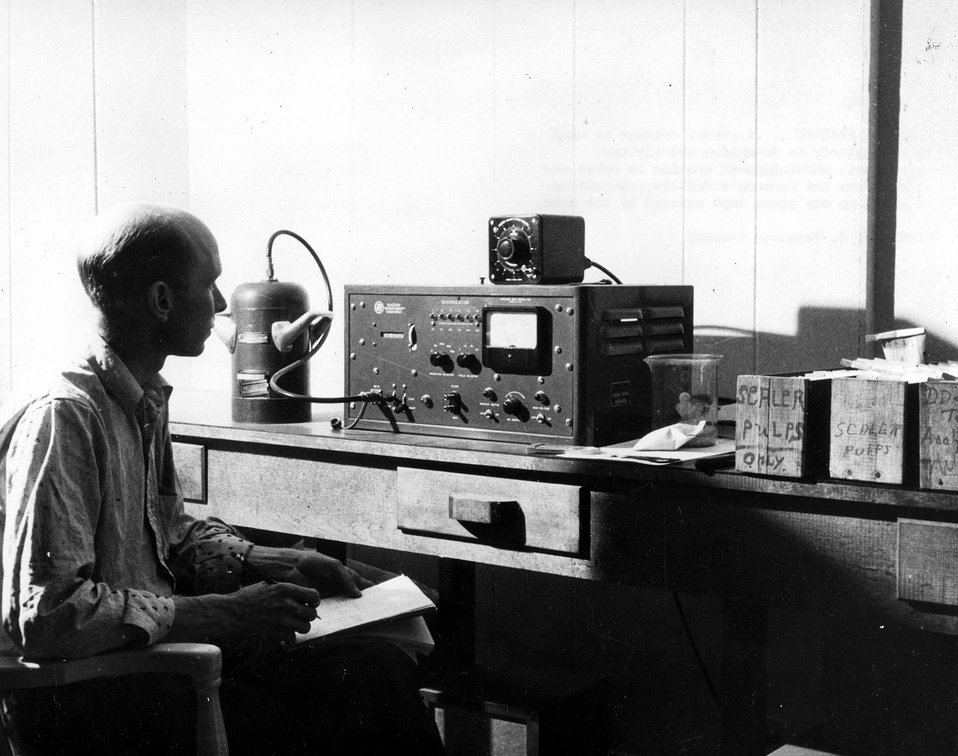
A Geiger counter is used by an engineer to determine quickly the approximate percentage of uranium in cores obtained from the Company's drilling operations. It picks up any gamma rays emitted by the core. c. 1955